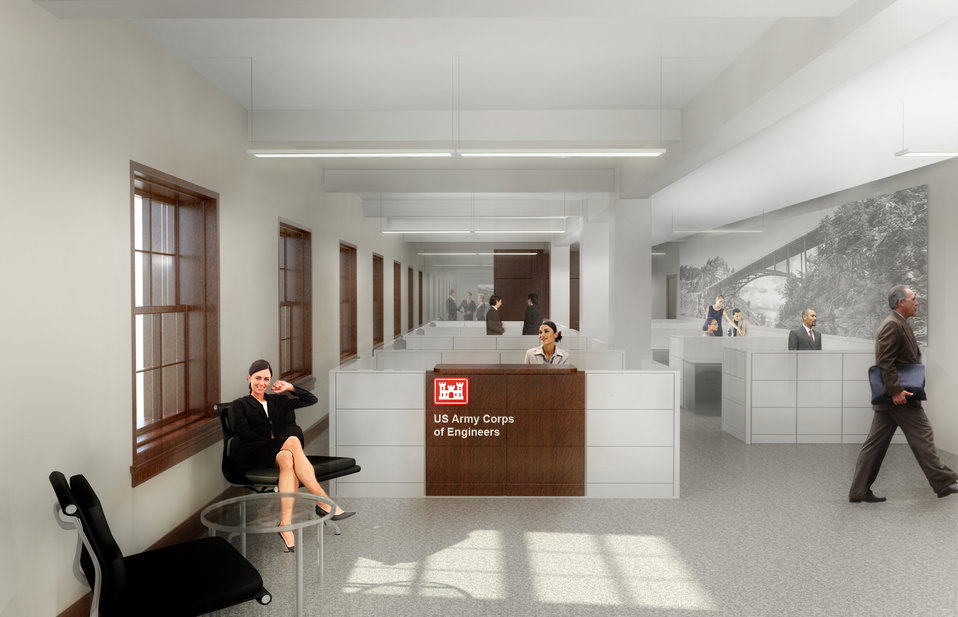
Colorado regulatory office to become first net zero energy historic building

GRAND JUNCTION, Colo. (May. 13, 2011) – A digital image rendering of the U.S. Army Corps of Engineers Sacramento District’s regulatory office located in the Wayne N. Aspinall Federal Building in Grand Junction, Colo. The 92-year-old historic building is undergoing renovations by the U.S. General Services Administration to achieve net zero LEED Platinum energy usage. LEED, or Leadership in Energy & Environmental Design, is a voluntary, consensus-based standard to support and certify successful green building design, construction and operations according to the U.S. Green Building Council. Platinum is the highest of the four categories used by LEED.

Scheduled to be completed in January 2013, the renovation is funded by the American Recovery and Reinvestment Act and could be the first net zero federal building on the National Register of Historic Places once completed. (Rendering courtesy of GSA.gov)